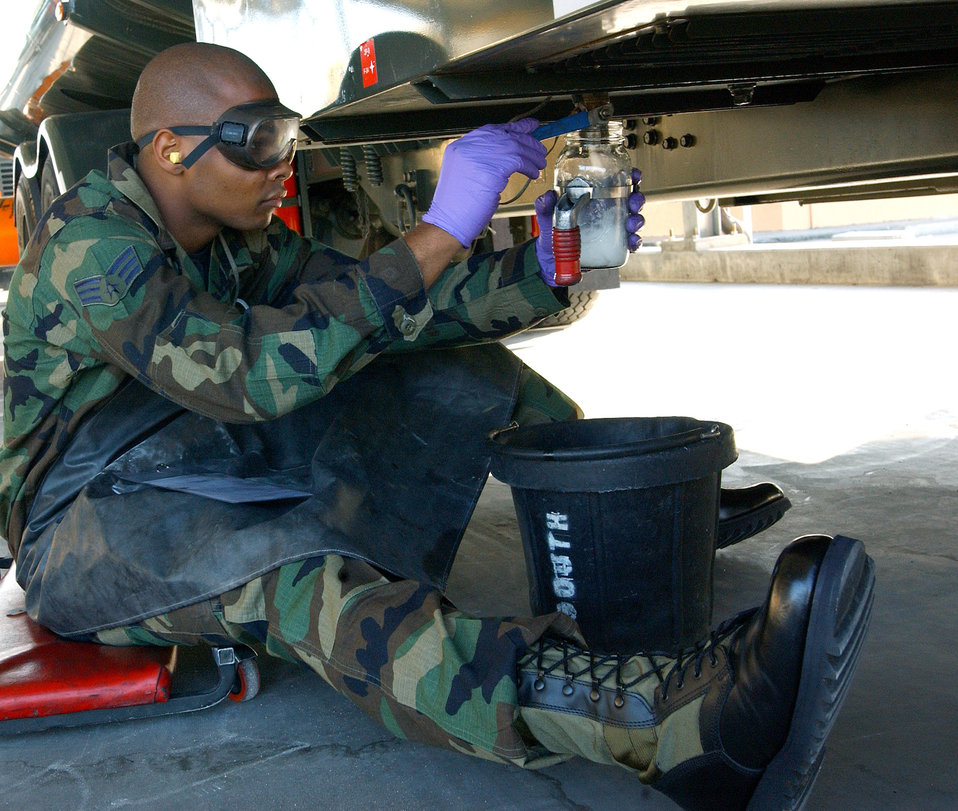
Golden Drum

AVIANO AIR BASE, Italy -- Senior Airman Kelston McDonald takes a sample of the JP8 fuel from the filter separator of a R-11 vehicle for the Golden Drum award here Sept. 20.